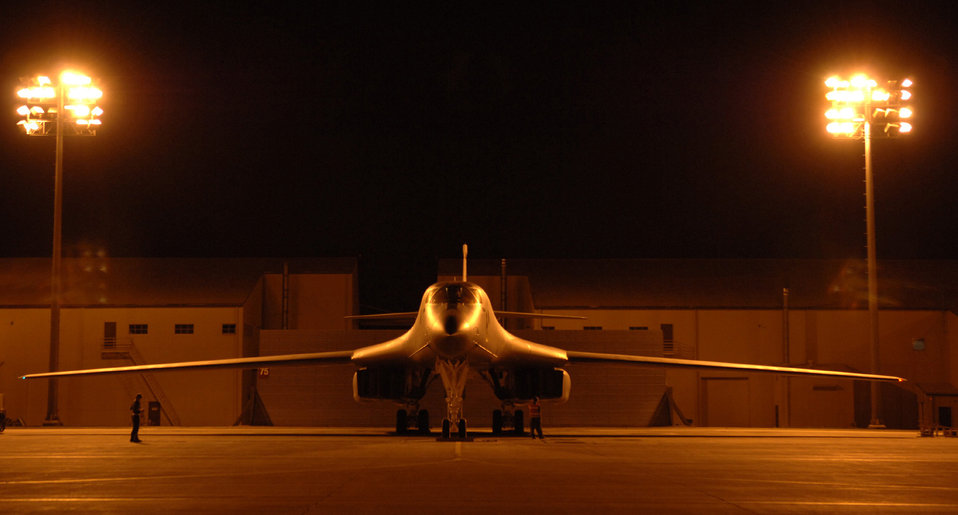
Awaiting takeoff

A 28th Bomb Wing B-1B Lancer sits on the ramp in the early morning at Ellsworth Air Force Base, S.D., Aug. 30, waiting to taxi. The aircraft was taking off to conduct the first test launch of a joint air-to-surface standoff missile.